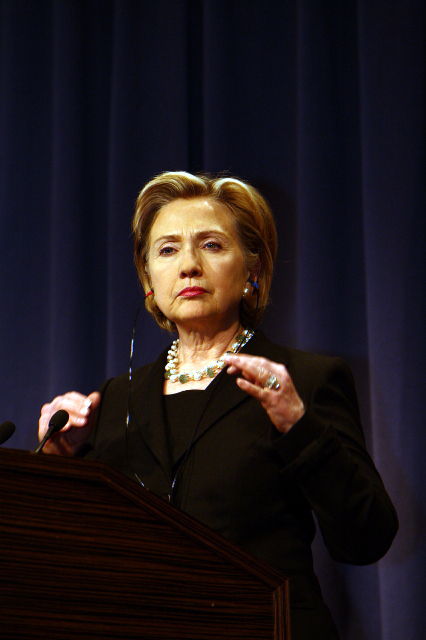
Press Conference With Russian Foreign Minister

Press conference after dinner meeting between U.S. Secretary of State Hillary Rodham Clinton and Russian Foreign Minister Sergey Lavrov in Geneva, Switzerland March 6, 2009.